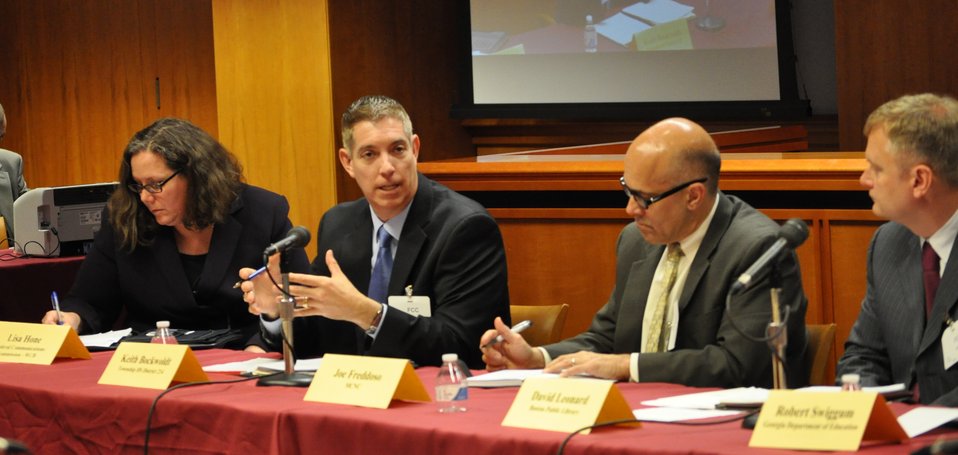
5.6.2014 E-Rate Modernization Workshop

Education and Library Technology Experts Roundtable: Enabling the Lowest “E-rate” for Schools and Libraries